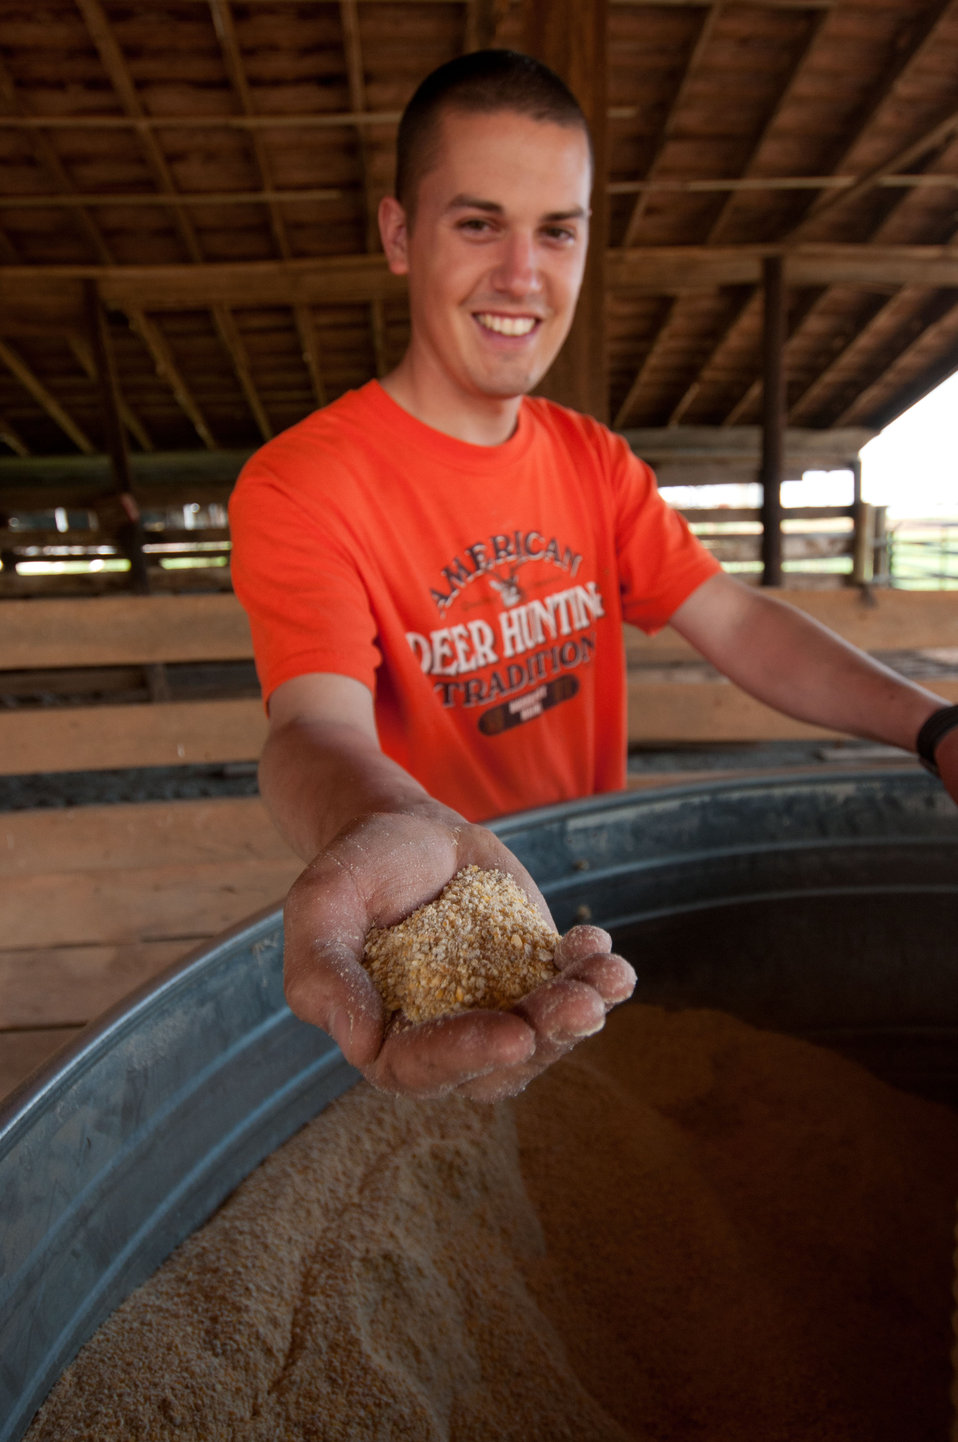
3rd generation farmer CJ Isbell takes pride in in the pork products he produces at Keenbell Farm, Rockville, VA, on Friday, May 6, 2011. The farm was established in 1951. Business has been very good for farmers with pasture raised pigs. Isbell finds it a challenge to expand fast enough to meet demands. Keenbell Farms pork products range from sausage, to bacon, pork chops, roasts, bratwurst, and many more in his onsite sales room and the Fall Line Farms food hub that offer a wide variety of household food staples and specialty items. Members can pick their customized orders from an ever changing inventory of fruits, vegetables, meats, soaps, eggs, cheeses, flowers, honey, pastas, sauces, syrups, baked goods, mushrooms, flour and grains. Suppliers post what they have to sell on Lulus Local Food online listing where customers can make their selection. Every Thursday, suppliers team up to deliver customized orders to, one of several pick-up points, designated by the customer in or around the Richmond, VA area.